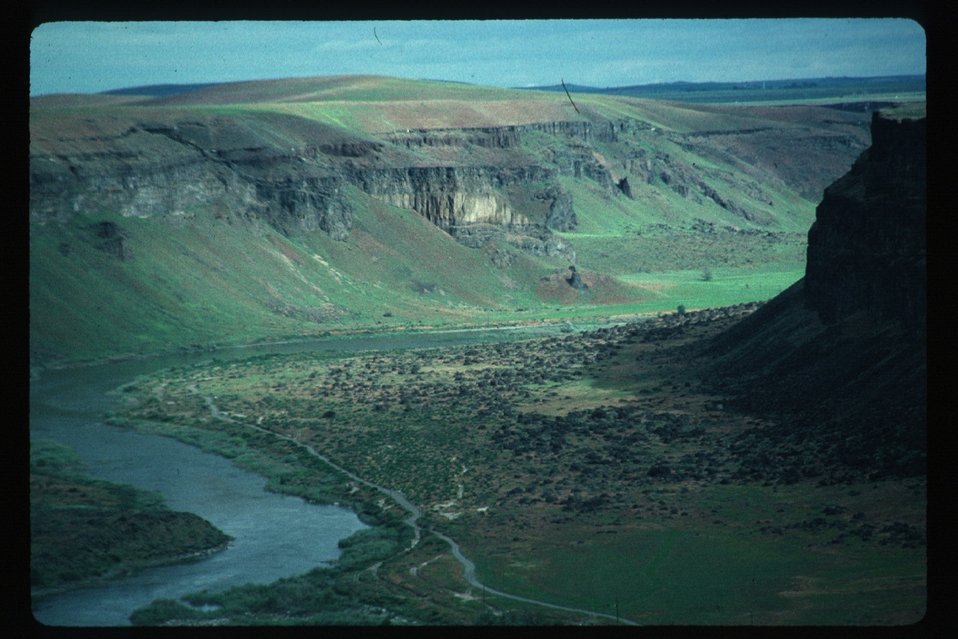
Snake River Canyon below Swan Falls Owyhee Field Office LSRD Lower Snake River District